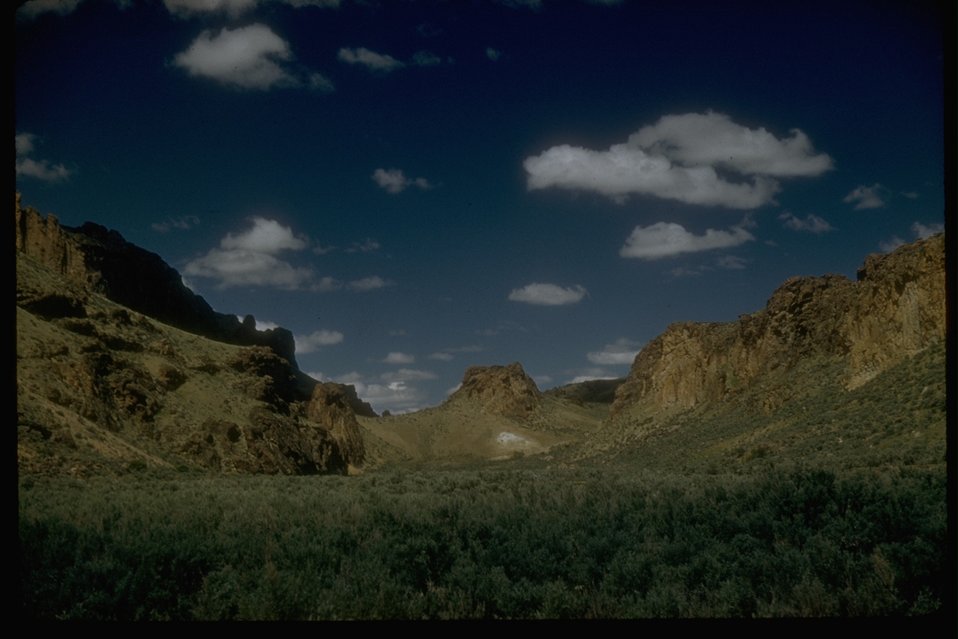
View of large rock formations south of Adrian.